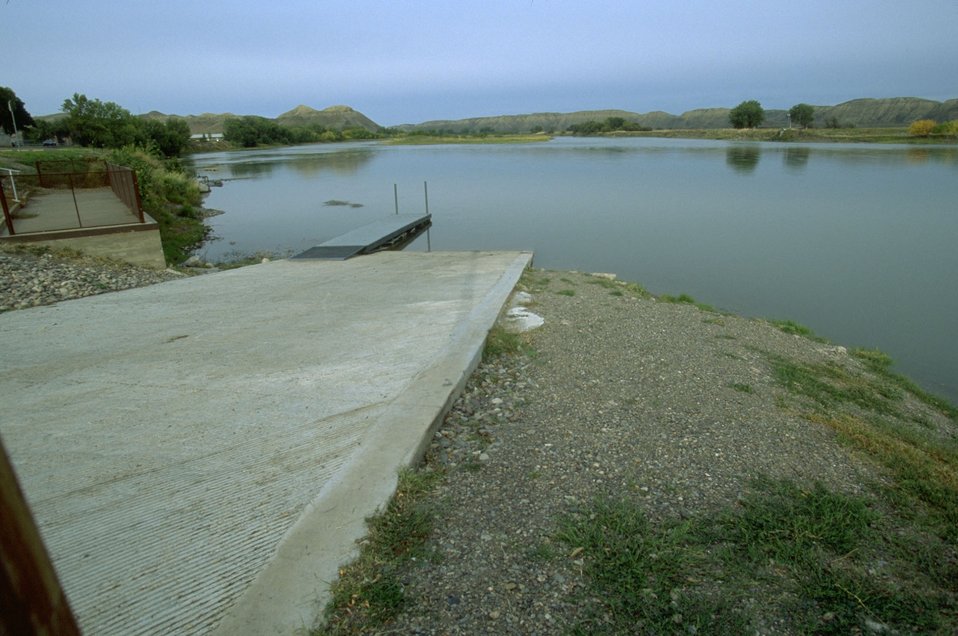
Boat launch at Fort Benton